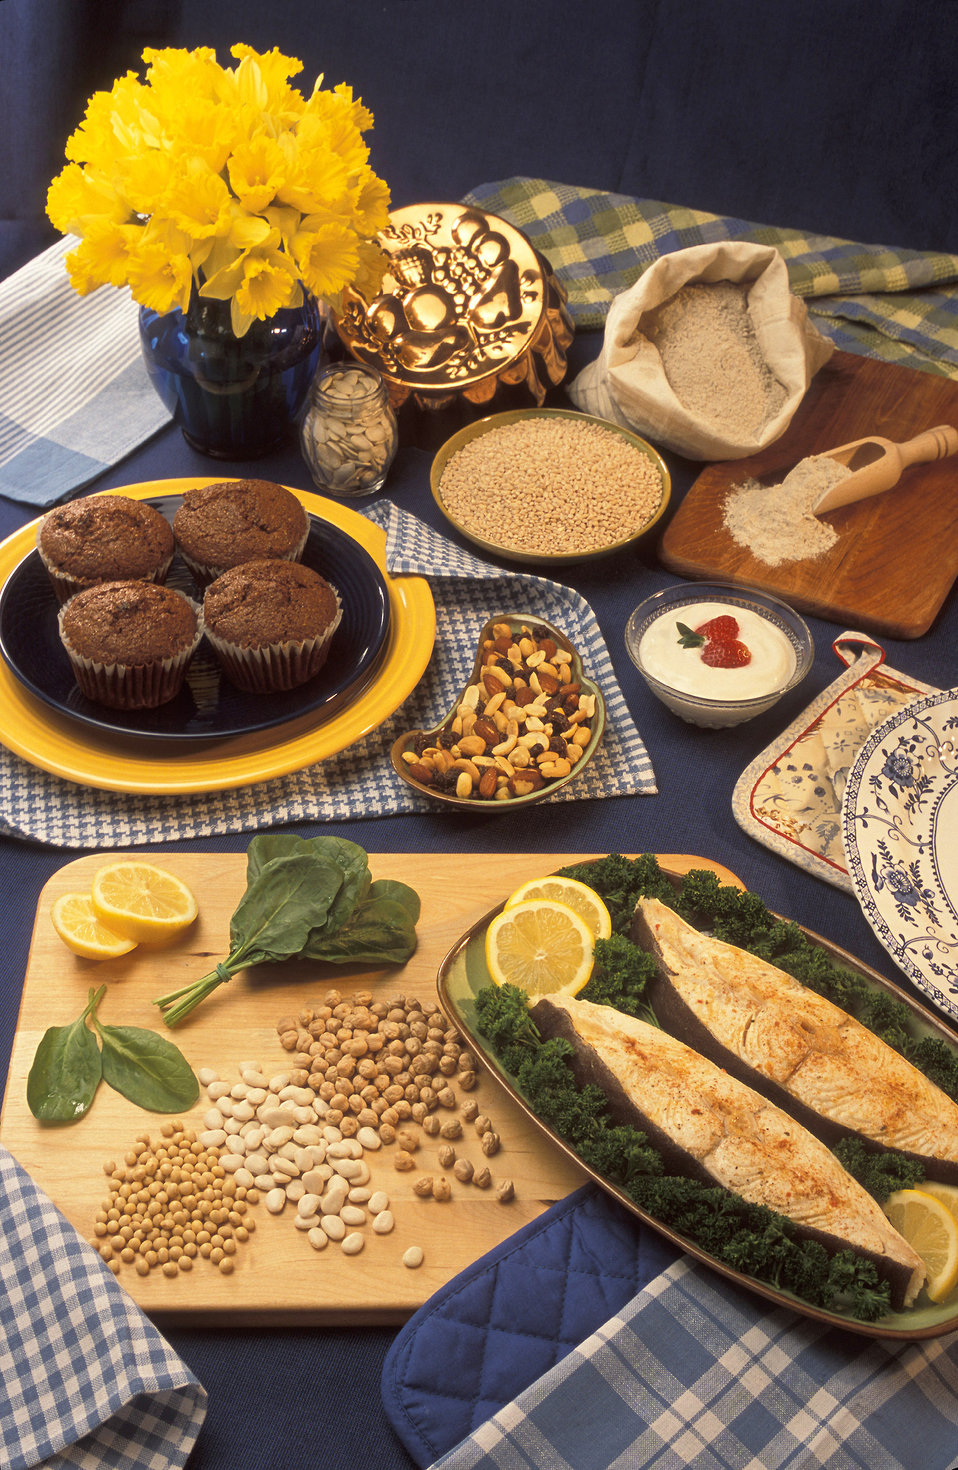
Bran muffins, pumpkin seeds, barley, buckwheat flour, low-fat vanilla yogurt, trail mix, halibut steaks, garbanzo beans, lima beans, soybeans, and spinach are good sources of magnesium.